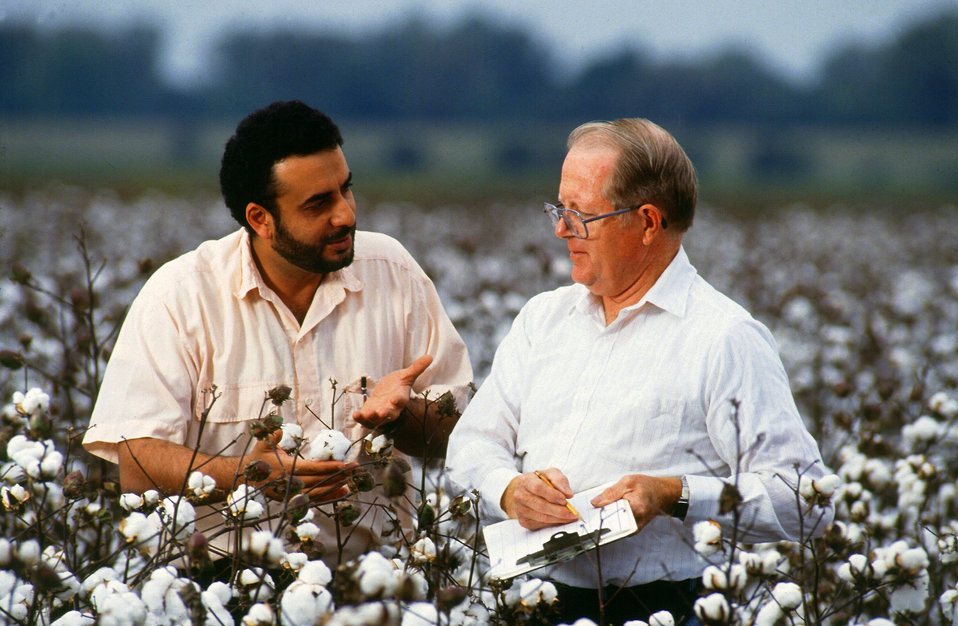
Graduate student Farhad Khorsandi and U.S. Department of Agriculture (USDA) Agricultural Research Service (ARS) soil agronomist Frank Whisler record cotton plant height, nodes, and fruiting sites-a process called mapping-to aid in quality and yield research.